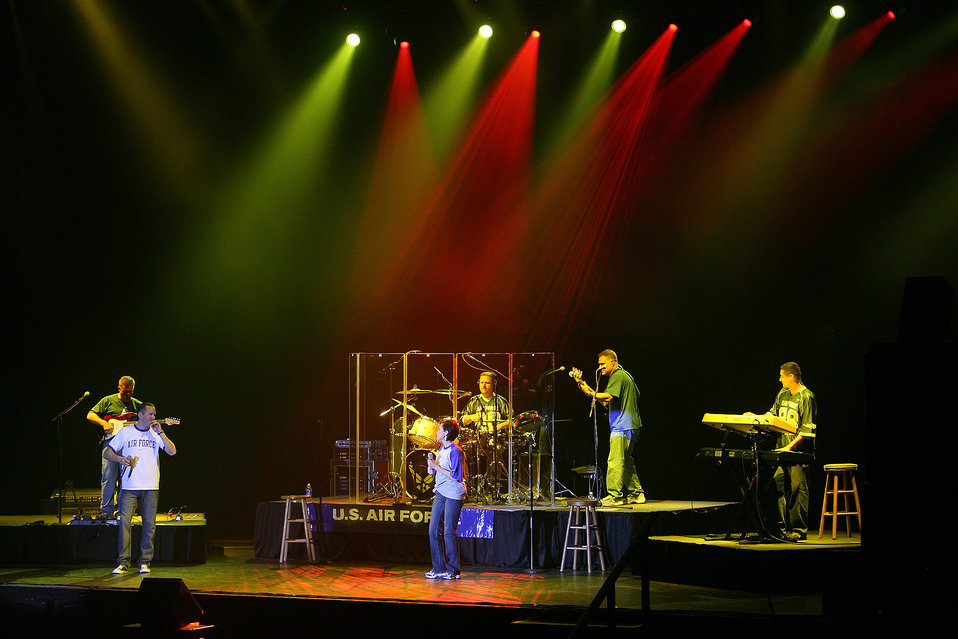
Air Force band rocks for Red Ribbon Week

Top Flight, the popular music ensemble of the Band of the West from Lackland Air Force Base, Texas, performs Oct. 22 at the Lila Cockrell Theater in San Antonio to support Red Ribbon Week. Red Ribbon Week is a national observance to raise awareness in youth to make the right decisions concerning substance abuse and inform them on the dangers of drugs.